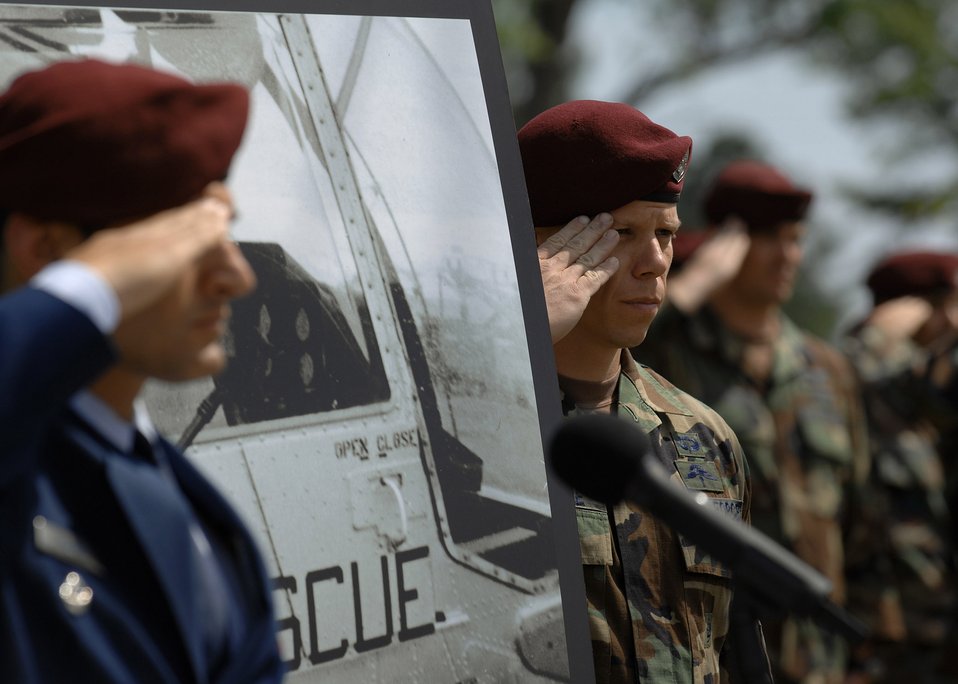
Pitsenbarger re-honored at Moody after 42 years

Airmen from the 38th Rescue Squadron salute during a Medal of Honor ceremony for Airman 1st Class William H. Pitsenbarger at Moody Air Force Base, Ga., April 18. Airman Pitsenbarger was awarded the Medal of Honor Dec. 8, 2000, for his heroic acts during the Vietnam War.